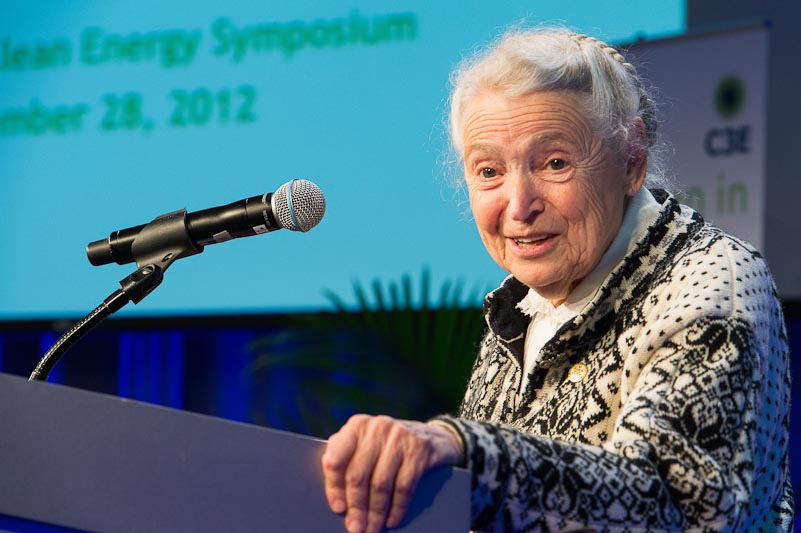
Millie Dresselhaus